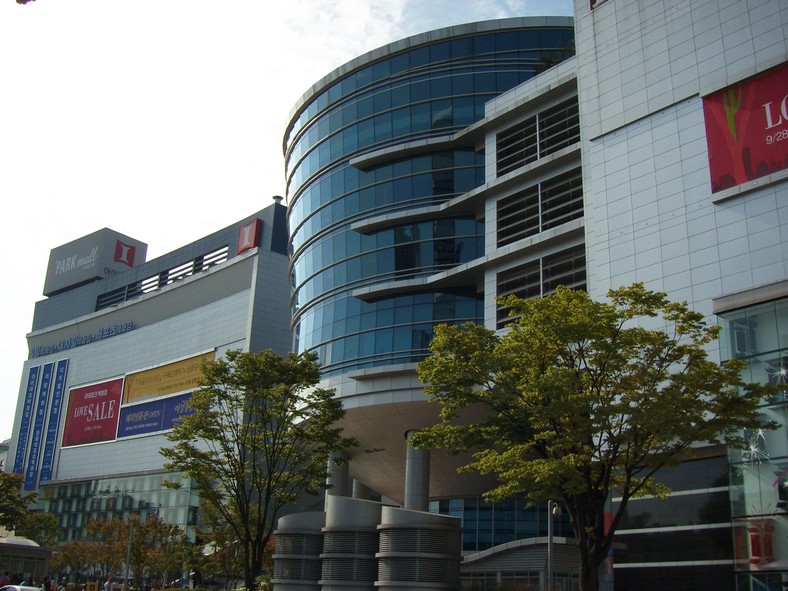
Yongsan Station